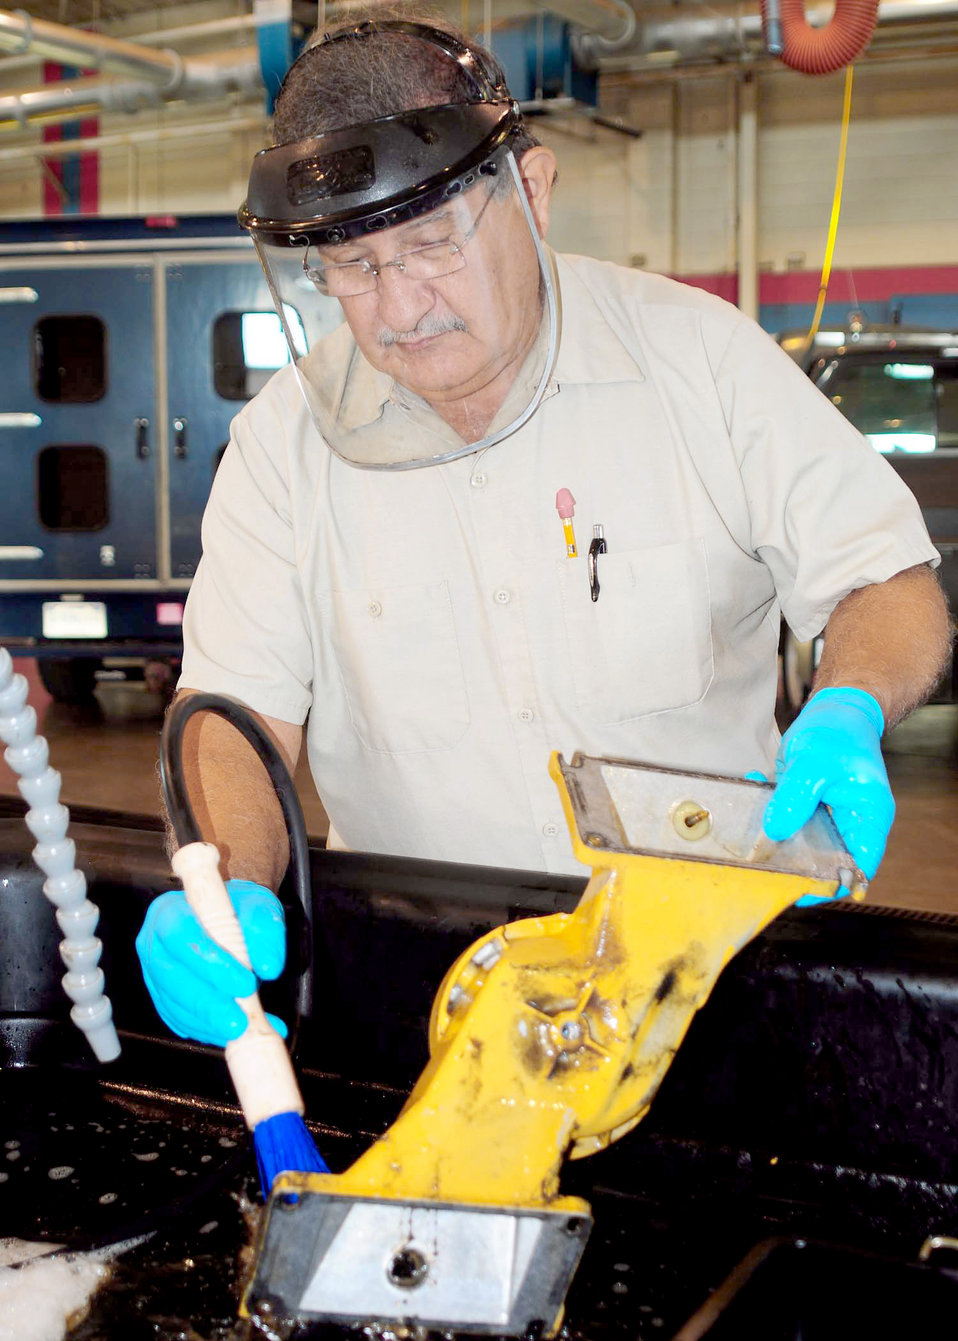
Parts washer at Altus

An environmentally-friendly parts washer at 97th Logistics Readiness Squadron vehicle management flight is getting attention for using oil-eating microbes, which means workers are no longer exposed to the solvents previously used.